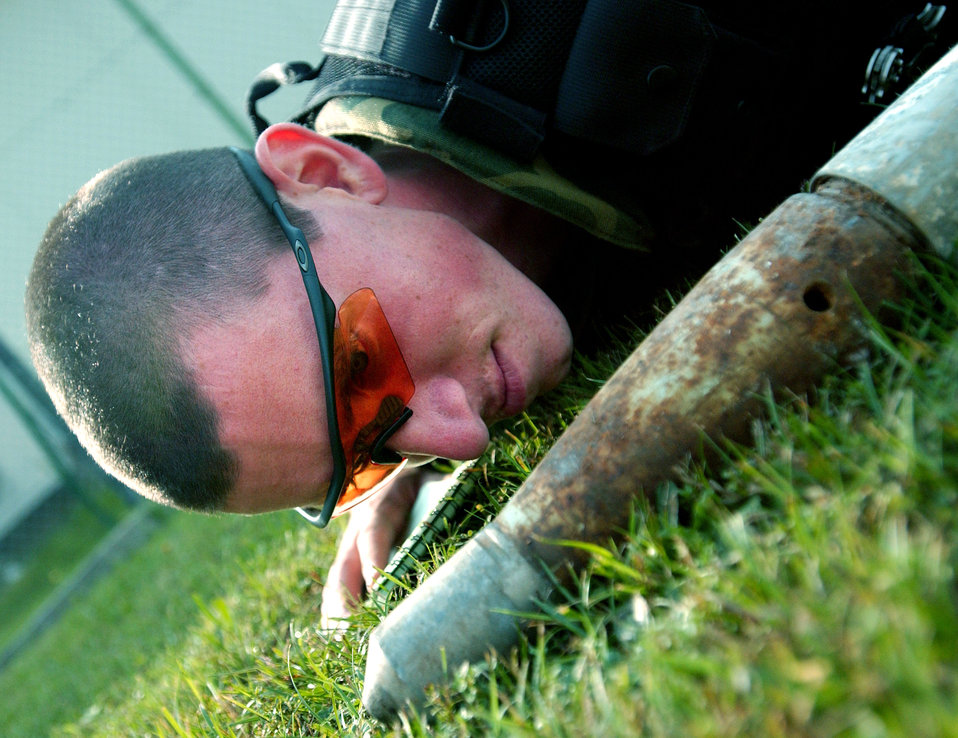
A sharp eye

AVIANO AIR BASE, Italy -- Airman 1st Class Jedd Lucas closely observes unexploded ordnance during training here Aug. 24. The Explosive Ordnance Disposal flight has these types of training exercises bi- weekly. Airman Jedd is a member of the EOD flight assigned to the 31st Civil Engineer Squadron.